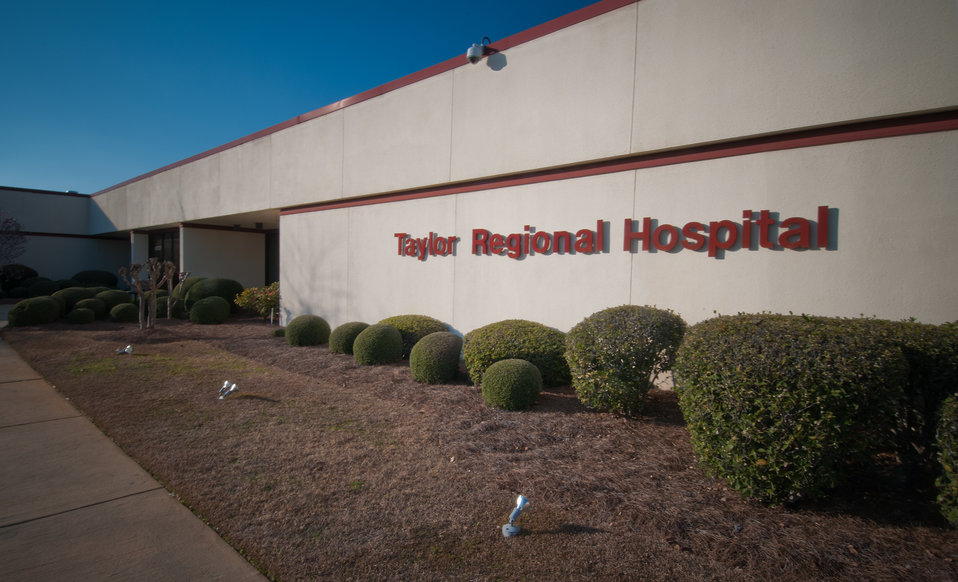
The R.J. Taylor Memorial Hospital on a sunny day in Hawkinsville, Pulaski County, GA on Mar. 6, 2013. This is the hospital’s main location and the facility is a licensed private, not-for-profit acute care facility providing emergency, specialty and primary health care. There is a second hospital located in Bleckly County, GA which provides services to residents in these two very rural counties of Georgia. These counties have a high percentage of people living below the state average poverty level and are considered the most economically distressed. The hospital has purchased an Electronic Medical Records System under an incentive program by the Federal government through the U.S. Department of Agriculture (USDA) Rural Development (RD) Community Facilities Loan (CF) that ensures fiscally responsive access to superior quality integrated health care.